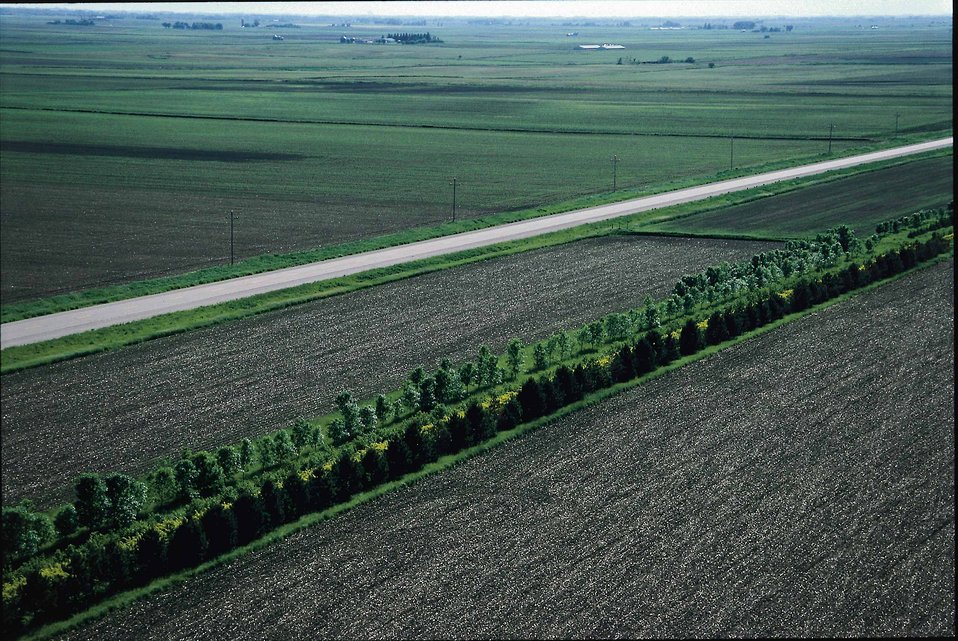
A 'living snowfence' windbreak, also known as a conservation buffer, is used along with conservation tillage in northern Iowa to reduce soil and snow blowing.